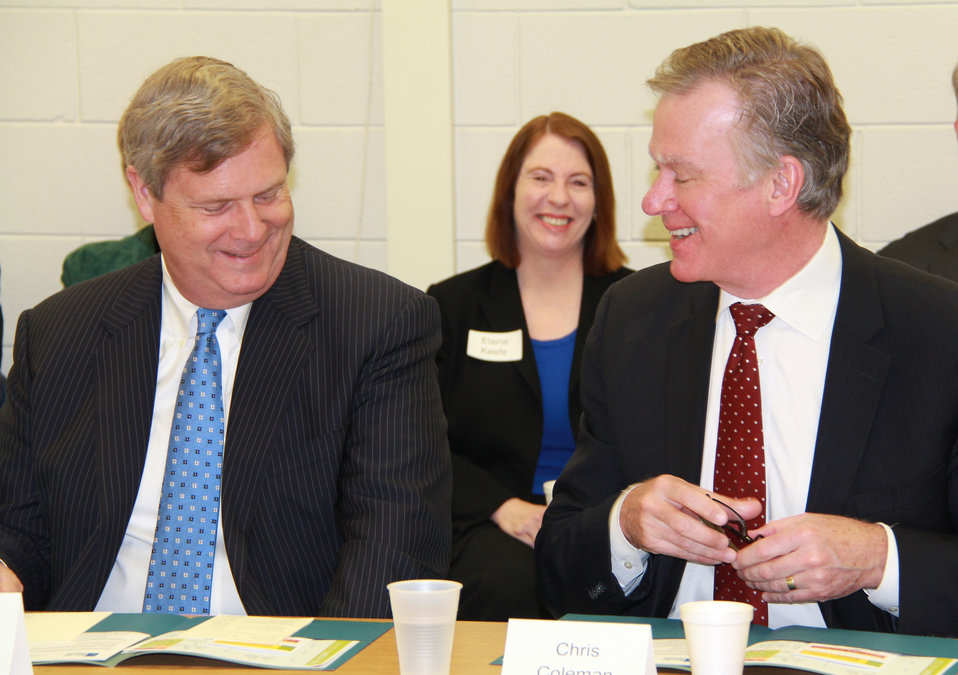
Agriculture Secretary Tom Vilsack with Chris Coleman at a roundtable discussion on the St. Paul public school nutrition program in St. Paul, MN, on Apr. 18, 2014.